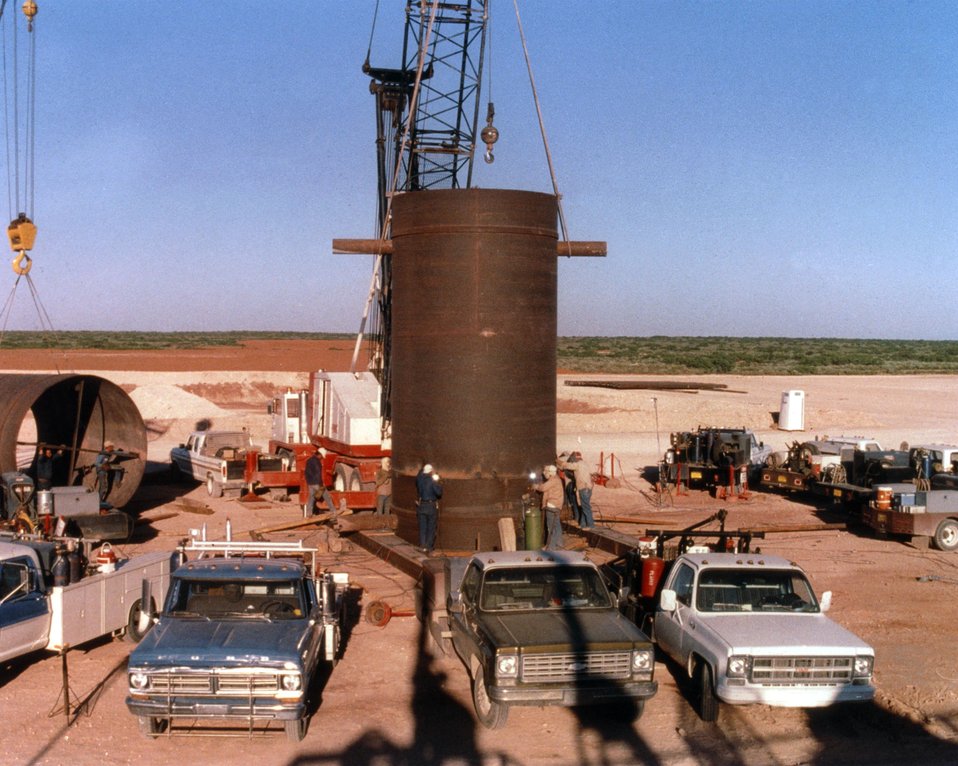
WORKERS ARE POSITIONING A SECTION OF STEEL CASING BEFORE INSERTING IT INTO THE HOLE.

THE WASTE ISOLATION PILOT PLANT IS A DOE RESEARCH AND DEVELOPMENT FACILITY FOR DEMONSTRATING THE SAFE DISPOSAL OF TRANSURANIC RADIOACTIVE WASTES. TEST SHAFTS HAVE BEEN DRILLED TO A DEPTH OF 2,100 FEET. THE SHAFTS, ONE 6 FEET IN DIAMETER AND THE OTHER 12 FEET IN DIAMETER, PROVIDE AN ENTRY PASSAGE AND VENTILATION TO THE UNDERGROUND SALT ROCK FORMATION THAT IS BEING TESTED TO DETERMINE ITS SUITABILITY FOR RADIOACTIVE WASTE STORAGE. FOLLOWING THE COMPLETION OF THE AUGERING OPERATION, A STEEL CASING WAS PLACED IN THE HOLE AT THE ANGERED DEPTH OF 100 FEET. THIS CASING, WHICH IS 1 INCH THICK AND 144 INCHES IN DIAMETER, SERVES AS A GUIDE FOR THE DRILLING EQUIPMENT SO THE HOLE WILL BE DRILLED STRAIGHT. THE CASING WAS IN 20-FOOT-LONG SEGMENTS WHICH WERE POSITIONED ABOVE THE HOLE USING A CRANE WHILE THE SECTIONS WERE WELDED TOGETHER.